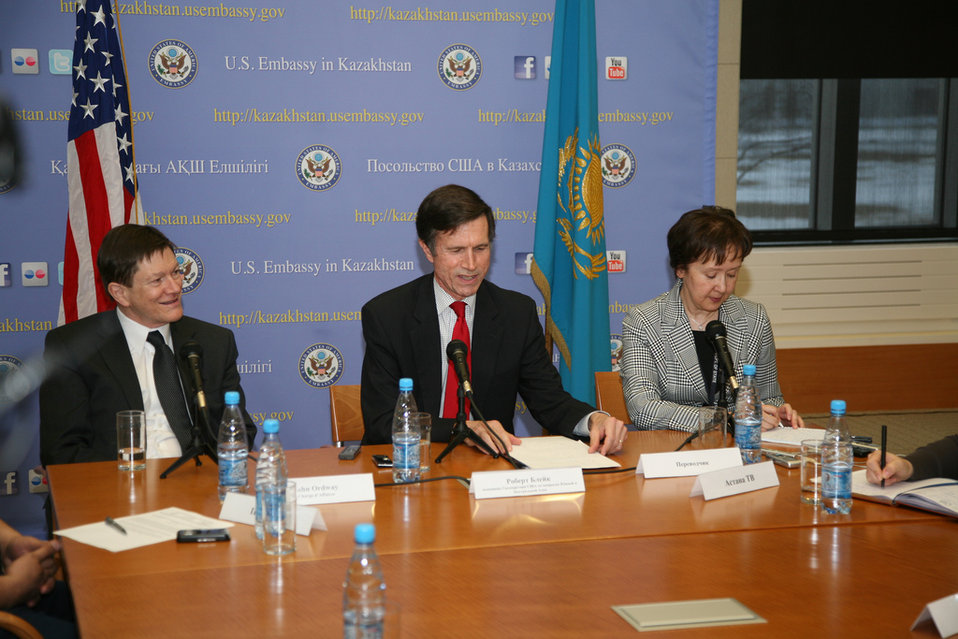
Assistant Secretary Blake and Charge d'Affairs Ordway Participate in a Media Roundtable

Assistant Secretary of State for South and Central Affairs Robert O. Blake, Jr., center, and Charge d’Affaires, a.i. John Ordway, left, meet with the press at the U.S. Embassy in Kazakhstan in Astana, on March 25, 2011.